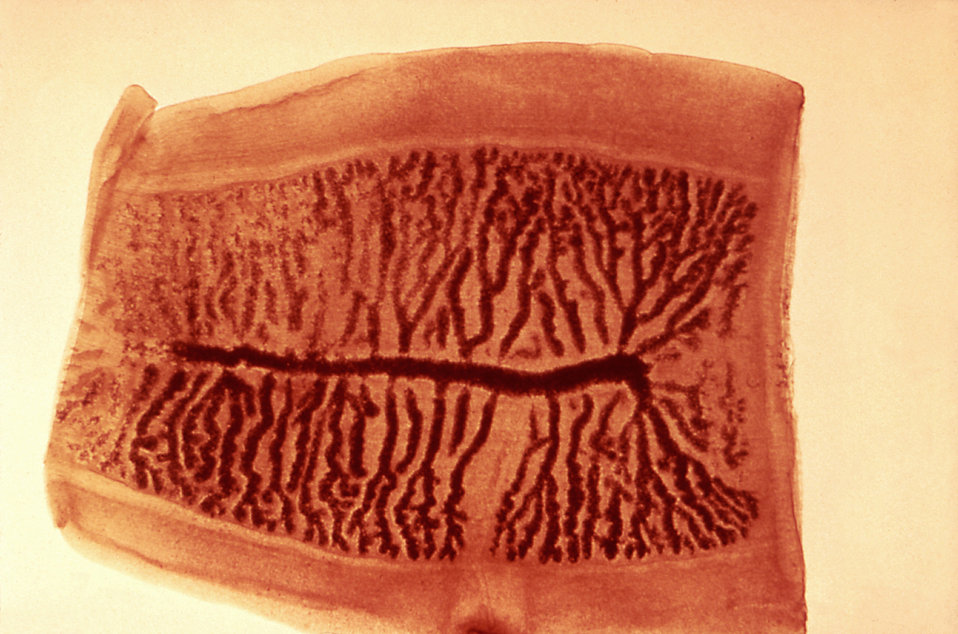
This micrograph reveals the morphology of a gravid proglottid from the cestode Taenia saginata, a tapeworm.